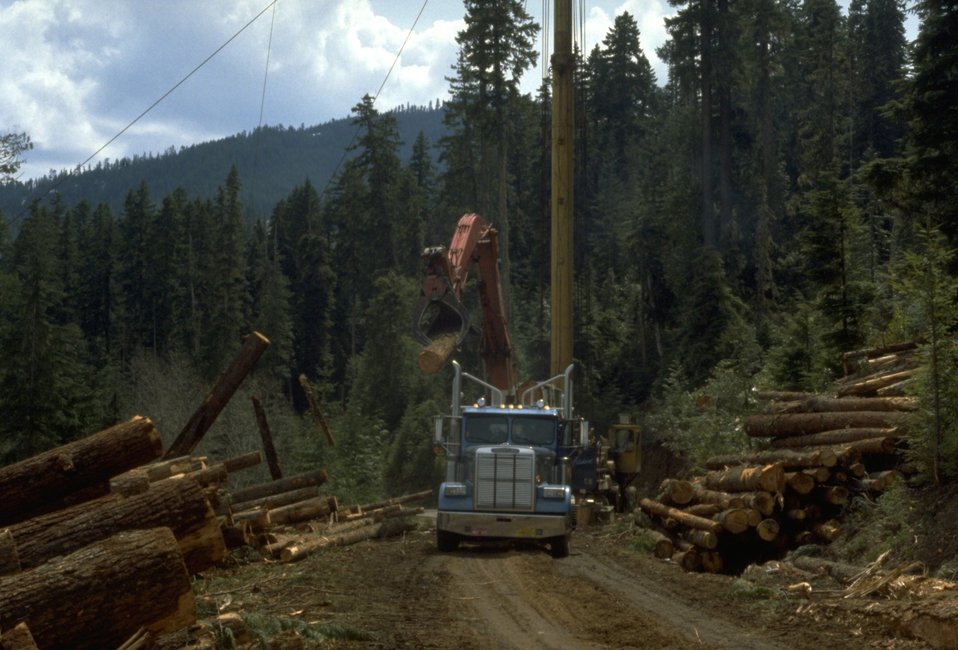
Logging Truck pulling up to a logging site.